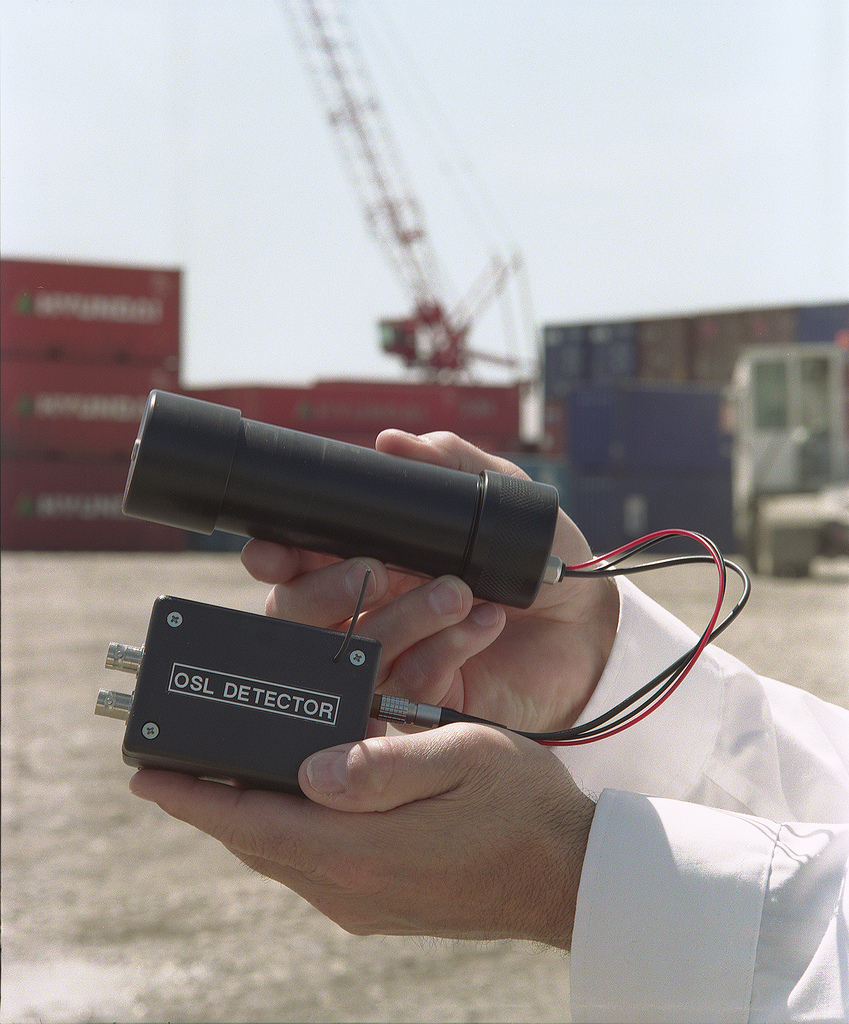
Optically Stimulated Luminescence-based radiation detectors developed by researchers at Pacific Northwest National Laboratory, can be used to detect special nuclear materials being smuggled into the country via sea containers. Also known as smart sensors, these battery-operated detectors are strategically located inside sea containers and information is collected via wireless personal digital assistants.